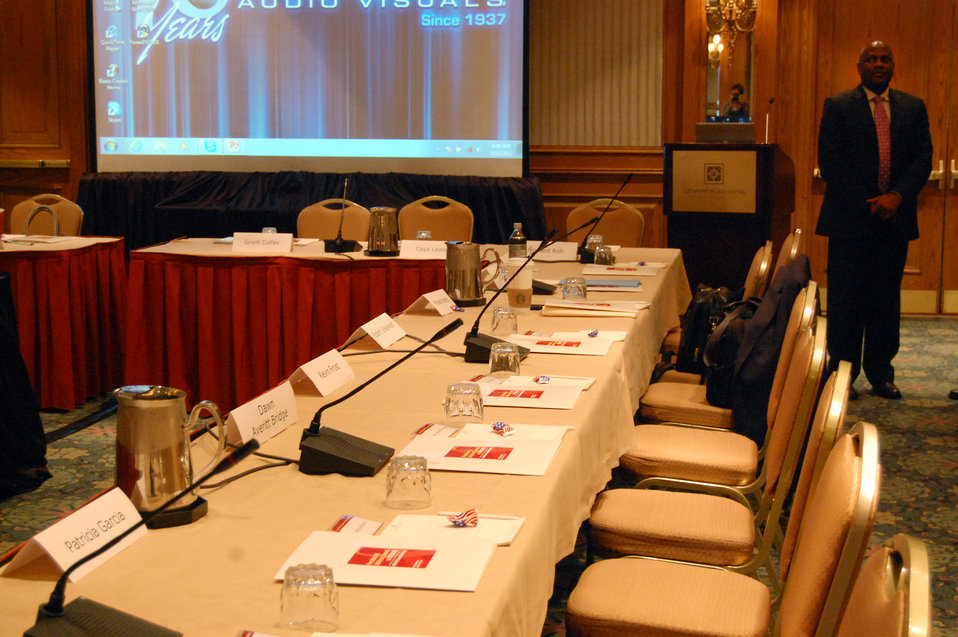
PACHA conf008